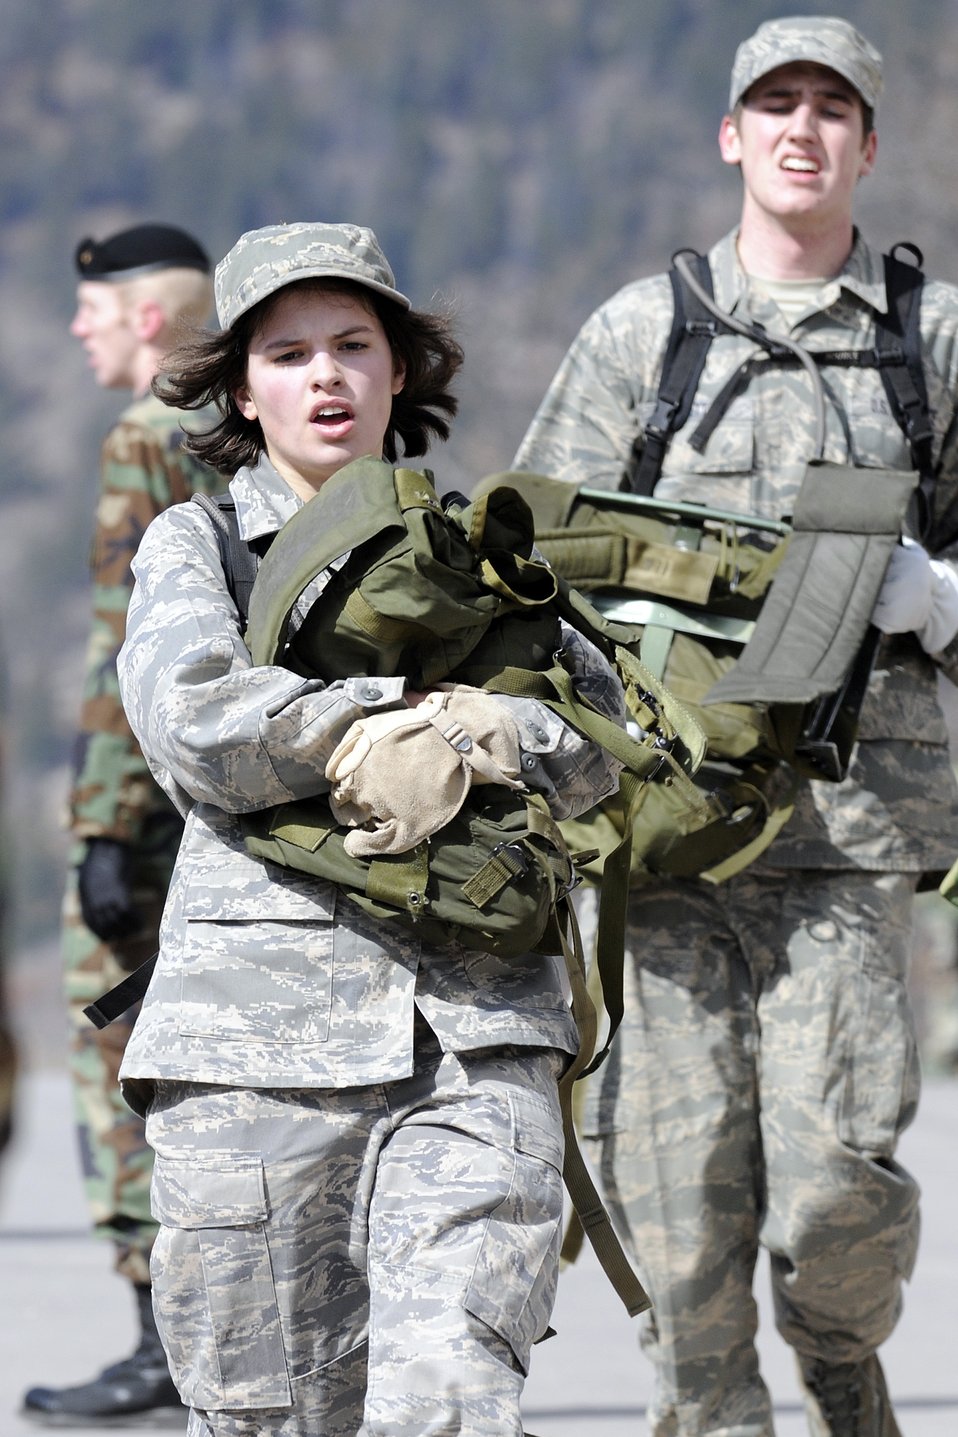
US Air Force Academy, CO

Cadet 4th Class Madison Chilton runs up and down the Core Values Ramp with a weighted ruck-sack during Recognition. Recognition marks the transition of the fourth classmen to upper class status. It is the ceremonial acknowledgement that the fourth class has successfully met the training requirements expected of it, and is prepared to continue its four-year journey through the Academy.